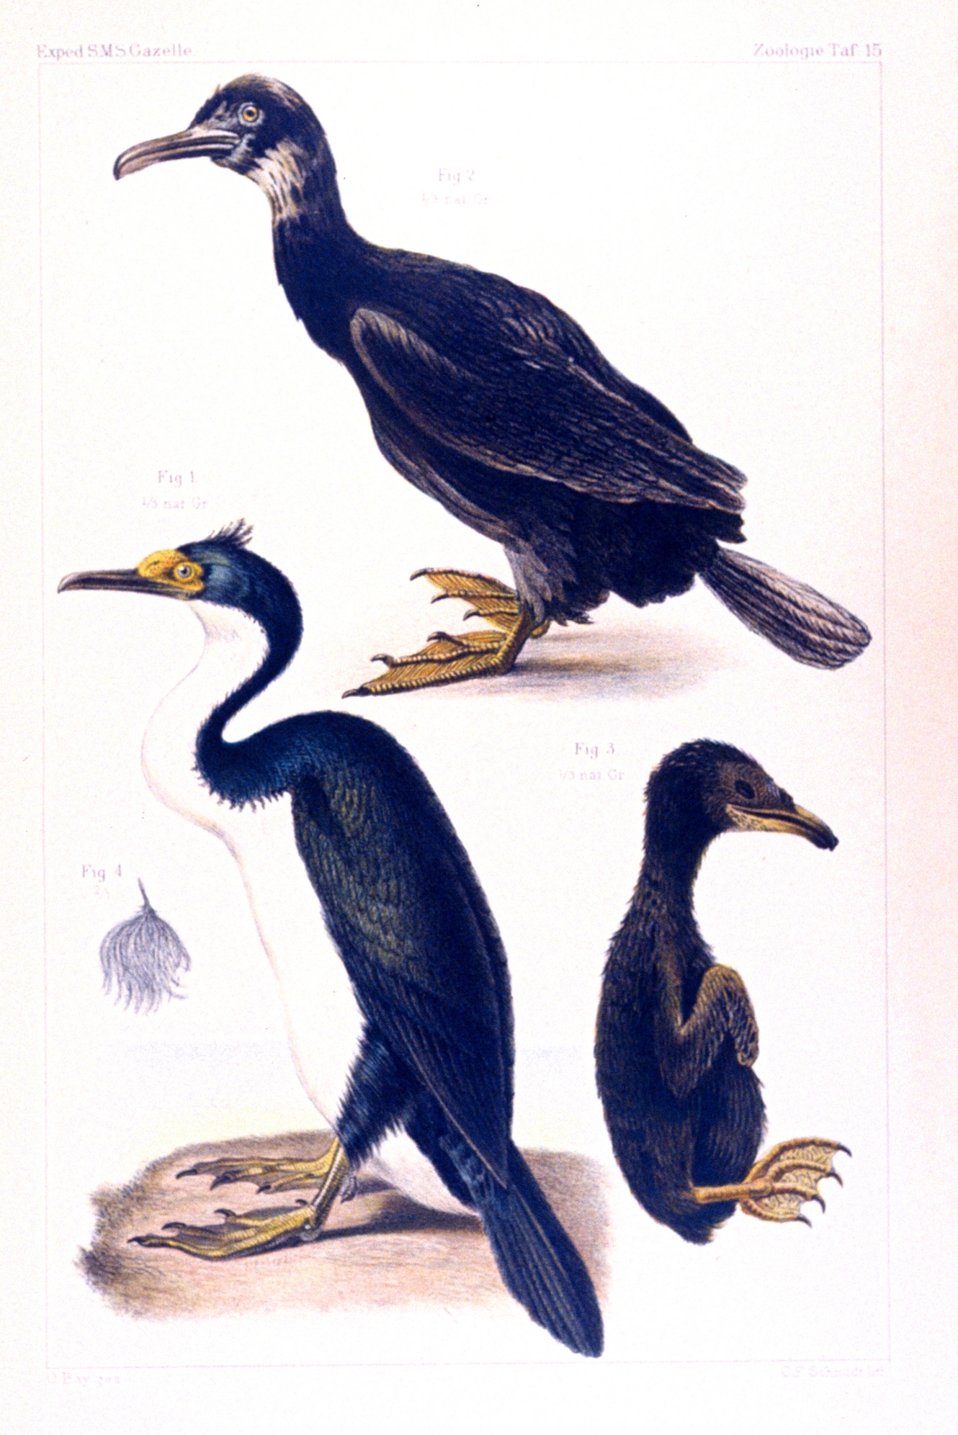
Water color of cormorants seen during the voyage of the GAZELLE, including an . chick.